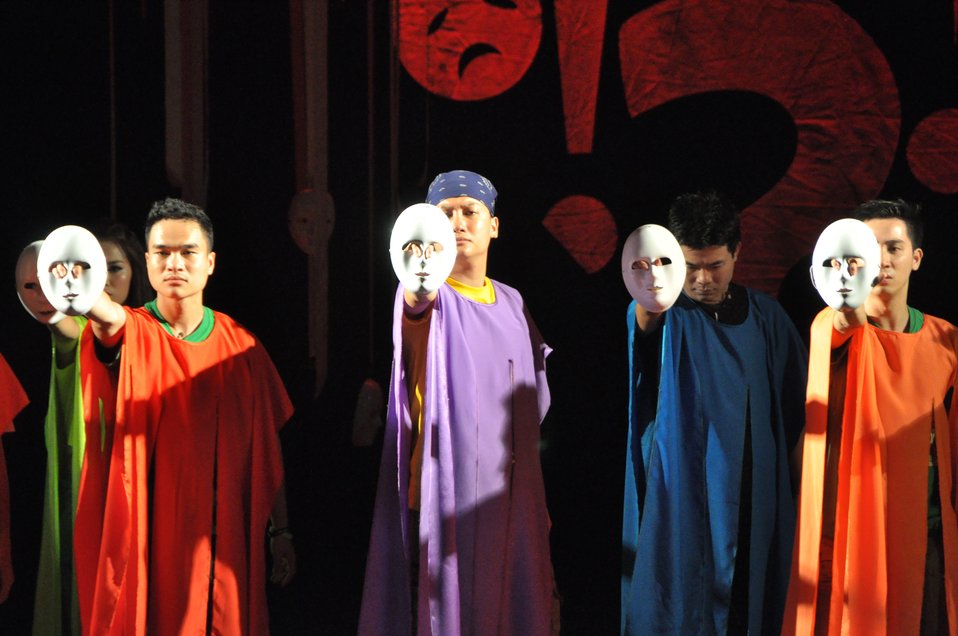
PEPFAR Musical Questions and Exclamations